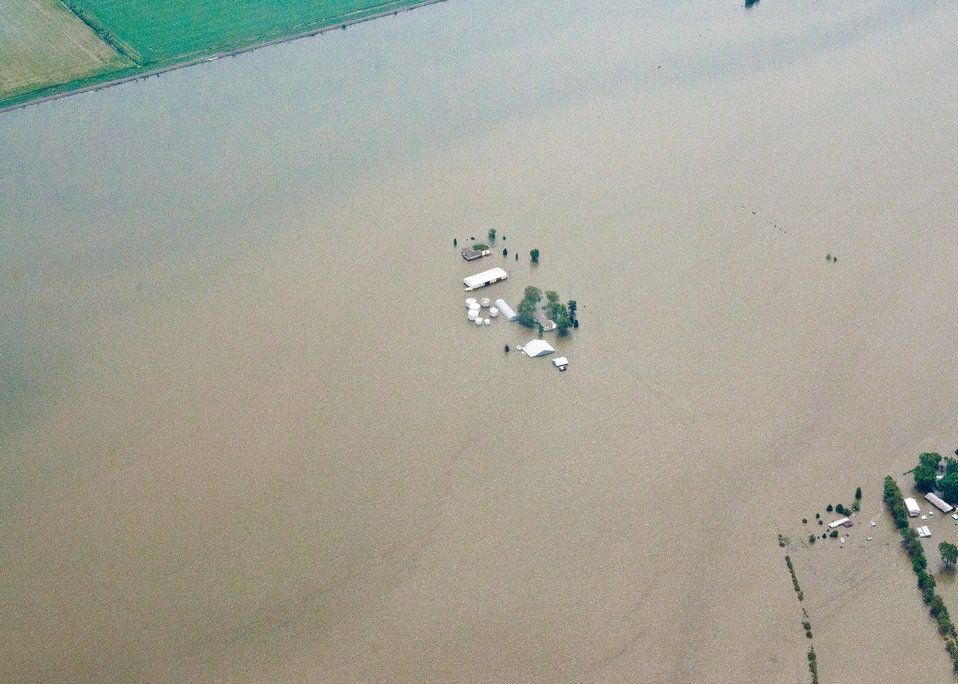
The Missouri river flooded hundreds of acres in Nebraska and Iowa. Agriculture Secretary Tom Vilsack visited the area on Friday, June 17, 2011, and spoke to agriculture producers and community leaders. The goal of the meetings was to get a firsthand look and provide that information back to Washington necessary to better deliver disaster programs expeditiously to effectively respond to this disaster. The United States Department of Agriculture agencies have programs to assist producers as they assess recovery efforts to assist with recovery in rural areas reeling from a natural disaster. USDA and the entire federal family have been working with state and local officials to provide relief to residents, farmers, ranchers and businesses.